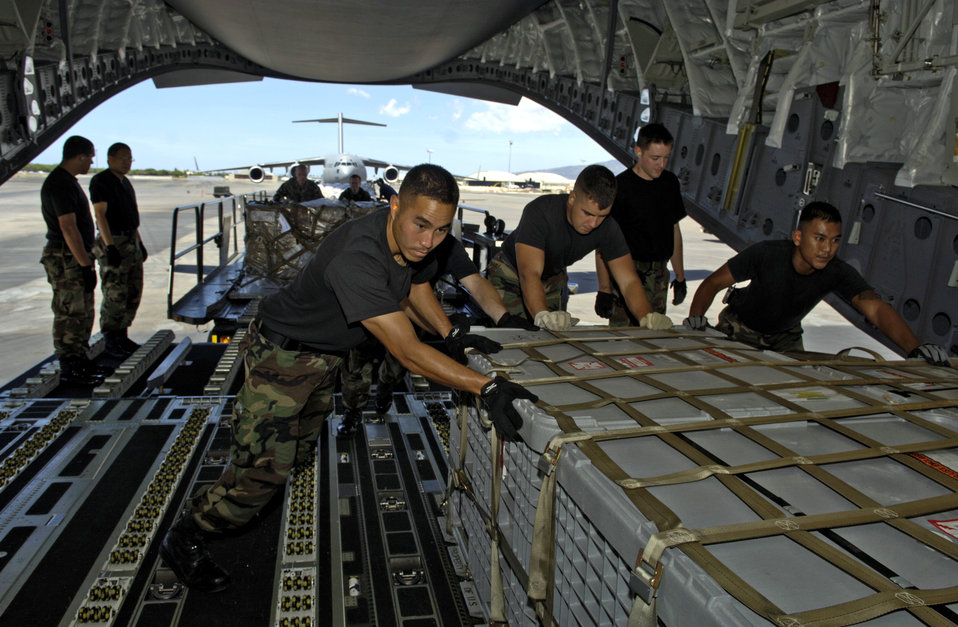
First look at Wake: Less damage than feared

Airmen from the 15th Civil Engineer Squadron load pallets of equipment on a C-17 Globemaster III at Hickam Air Force Base, Hawaii, Sept. 12. The C-17 took a 53-person team comprised of CE, Defense Department employees and contractors to assess damage left by Super Typhoon Ioke after it struck Wake Island Aug. 31.